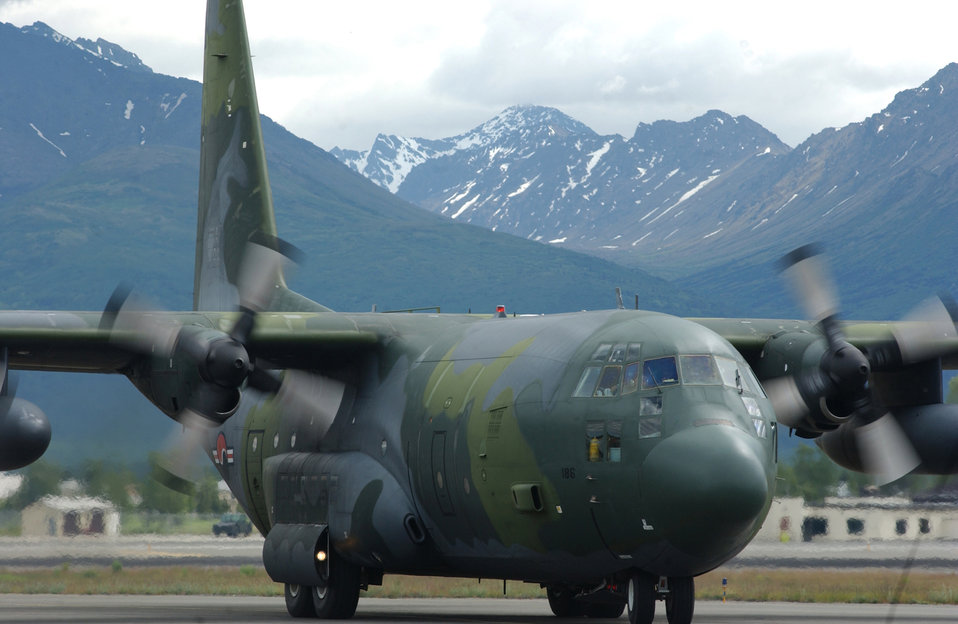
ROK Hercules

ELMENDORF AIR FORCE BASE, Alaska -- A Republic of Korea air force C-130 lands here with a load of simulated heavy cargo drops for Cooperative Cope Thunder, a Pacific Air Forces-sponsored air combat training exercise. The ROK is helping provide airlift for personnel and cargo during Cope Thunder, which ends June 20.